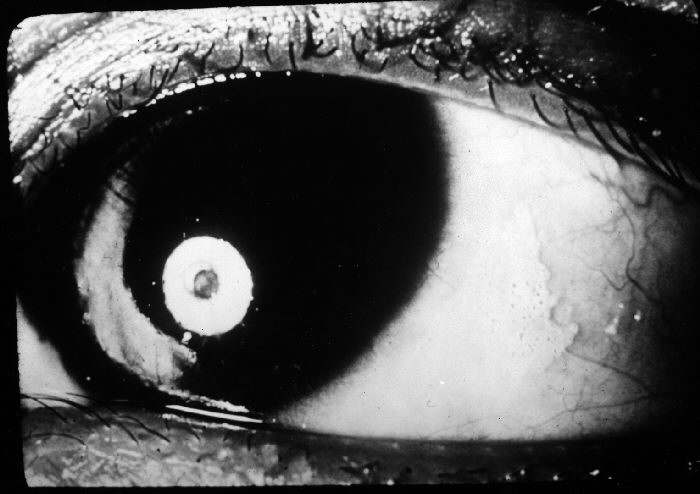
Malnutrition-Bitot's Spots